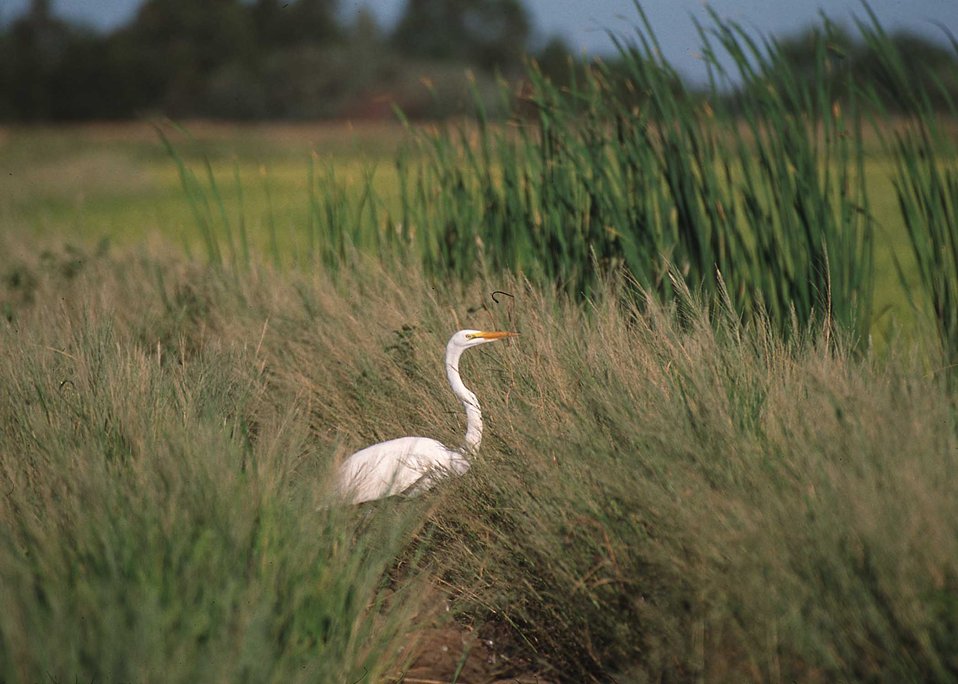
Common egret in grassy area near rice field in Northern California.